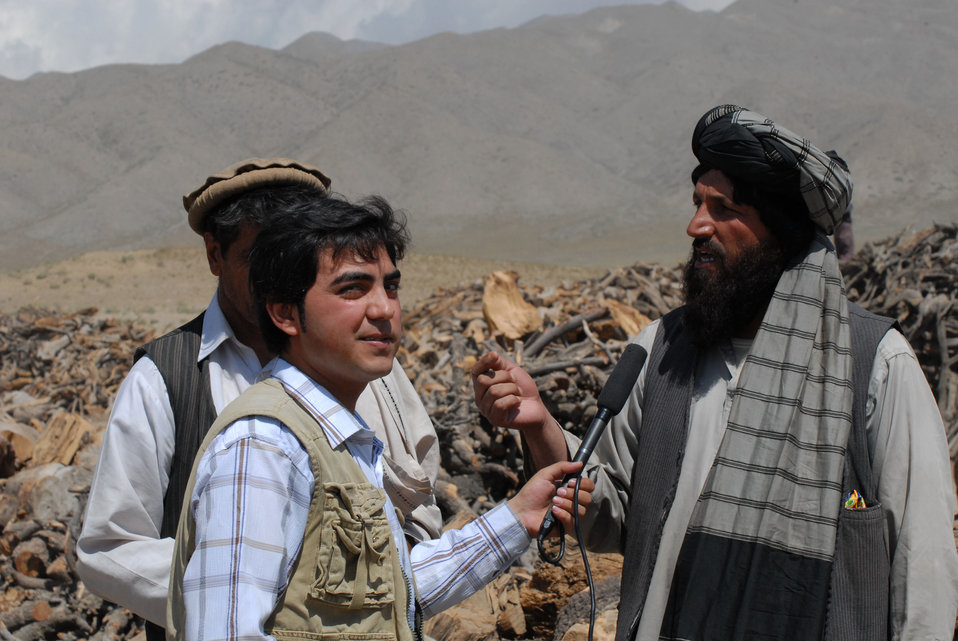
'On the Road' in Paktya Province